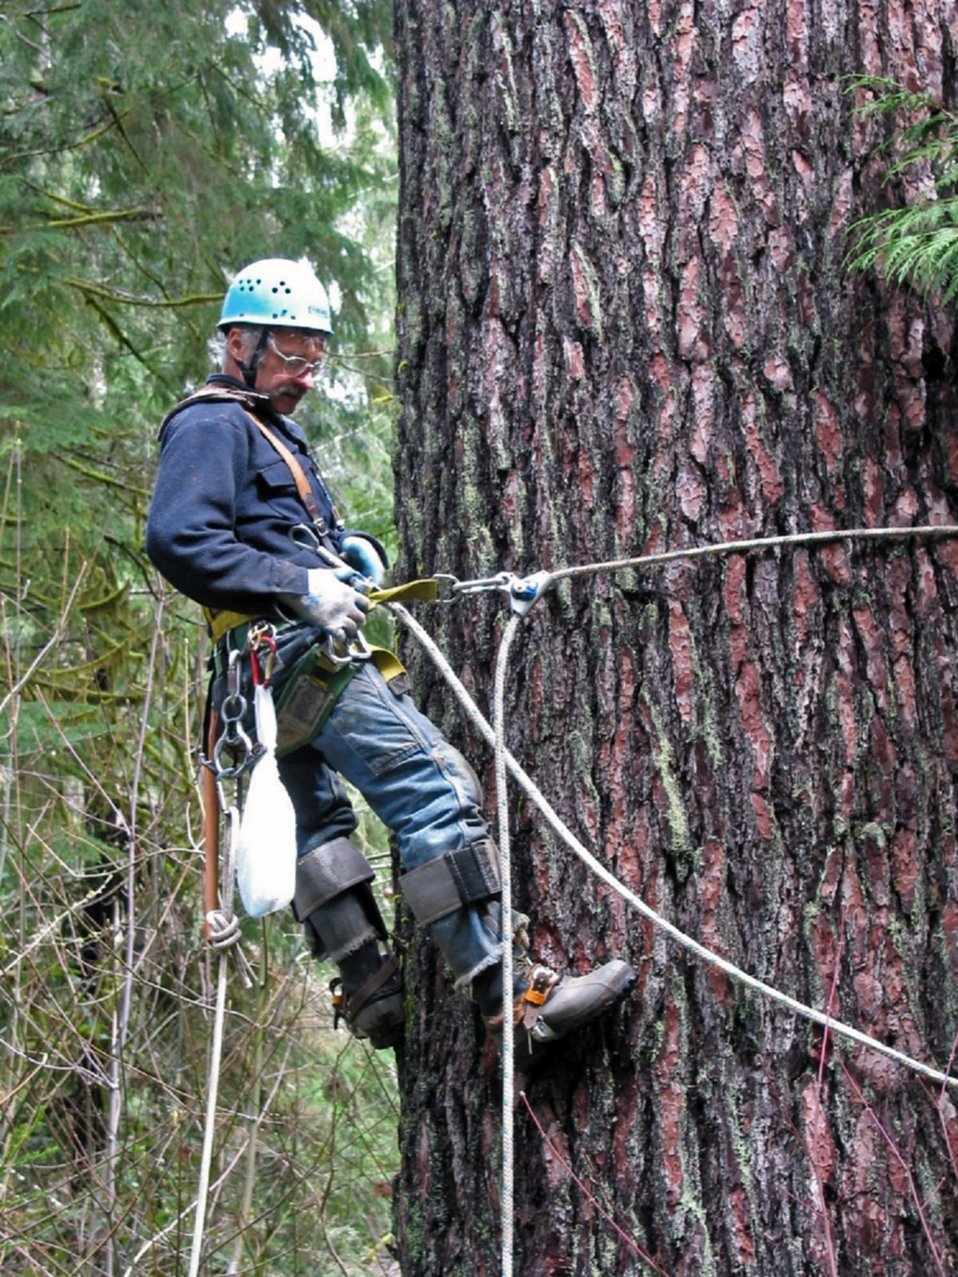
Charlie Boberg climbs a 5' Sugar Pine in the Susan Creek Campground during a hazard assessment. Gregg Morgan, Roseburg BLM at Work2